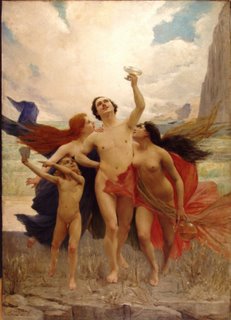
Español: Pintura de alfredo valenzuela Puelma